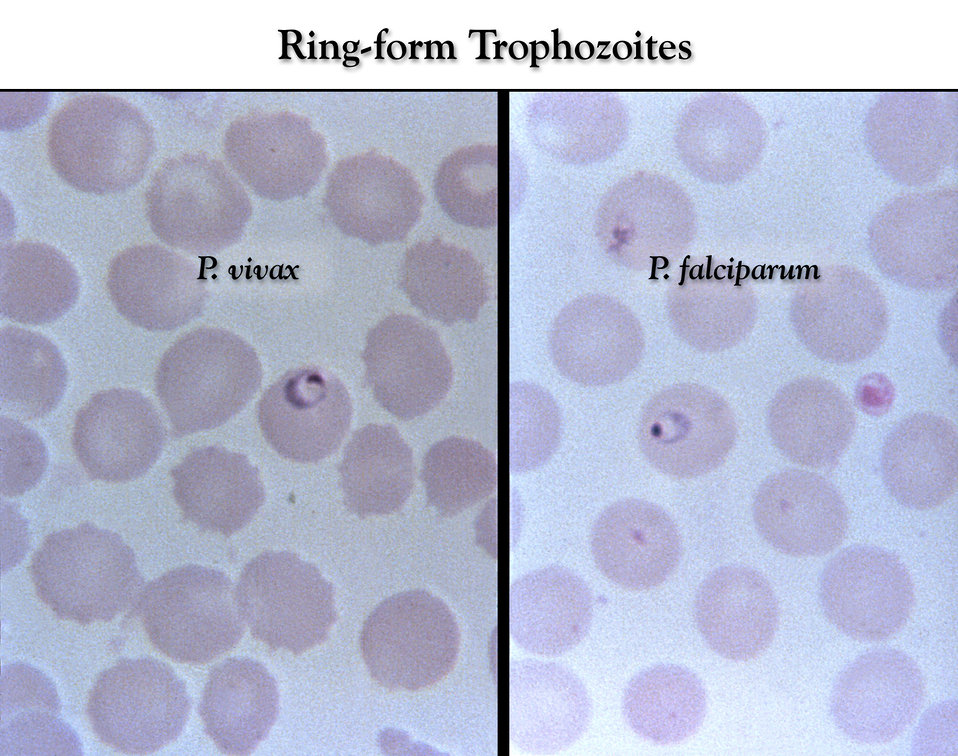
These thin film Giemsa stained micrographs show ring-form Plasmodium vivax and P. falciparum trophozoites.